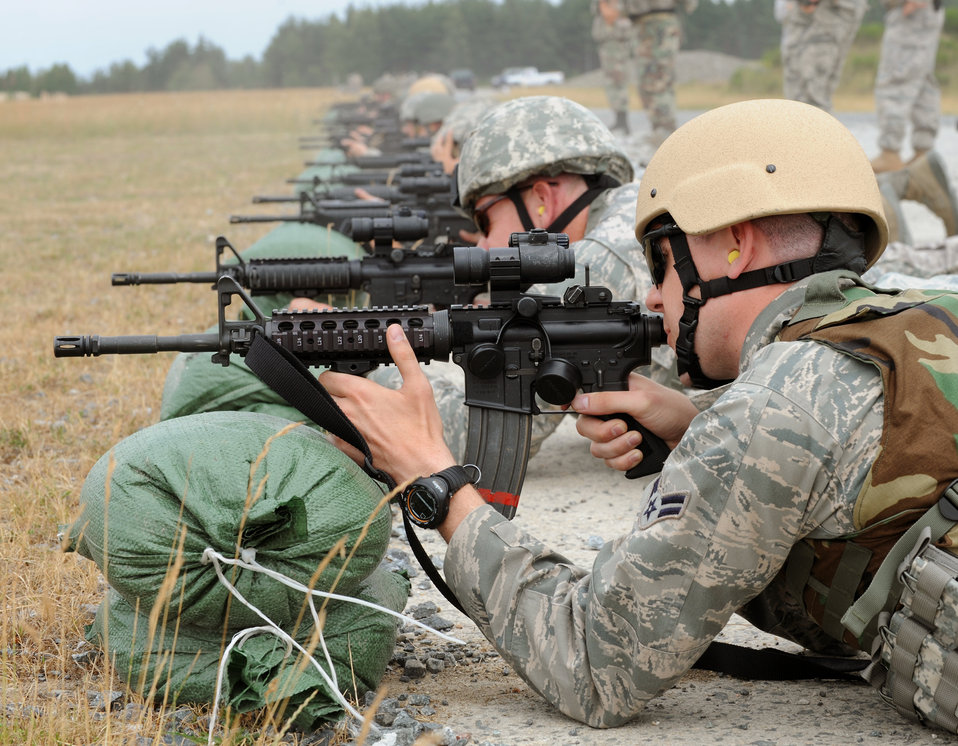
Exercise Allied Strike 10

Airmen zero in on the target during Exercise Allied Strike10, at the U.S. Army's training area in Grafenwoehr, Germany, July 23, 2010.